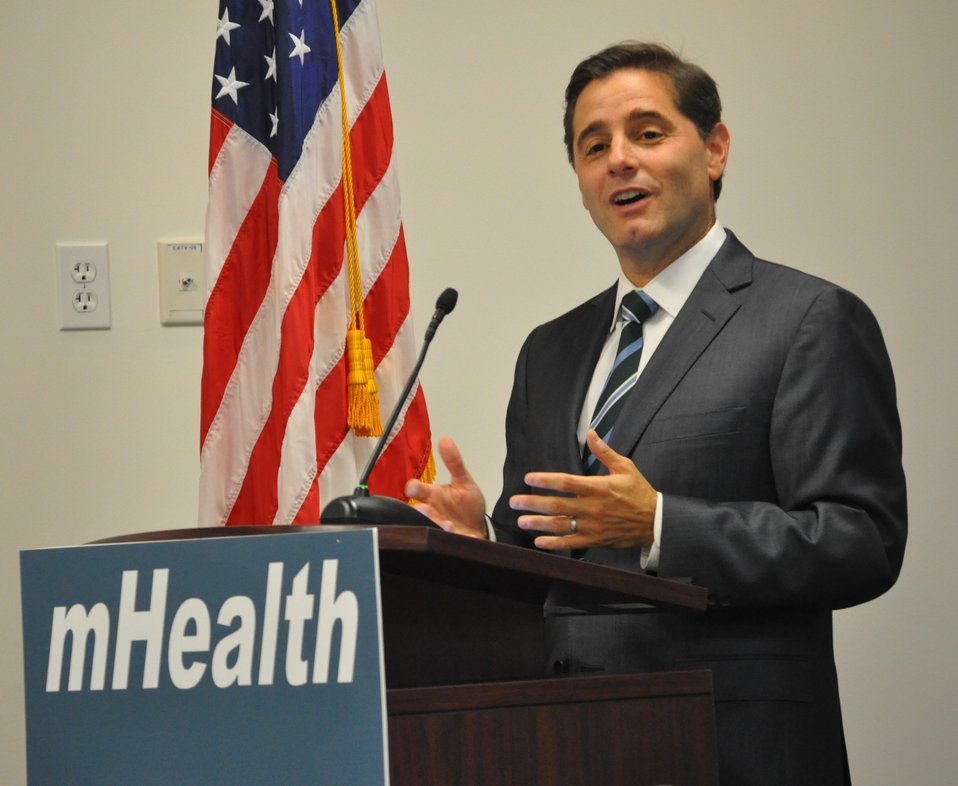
mHealth Task Force Findings and Recommendations Event - DSC 0662